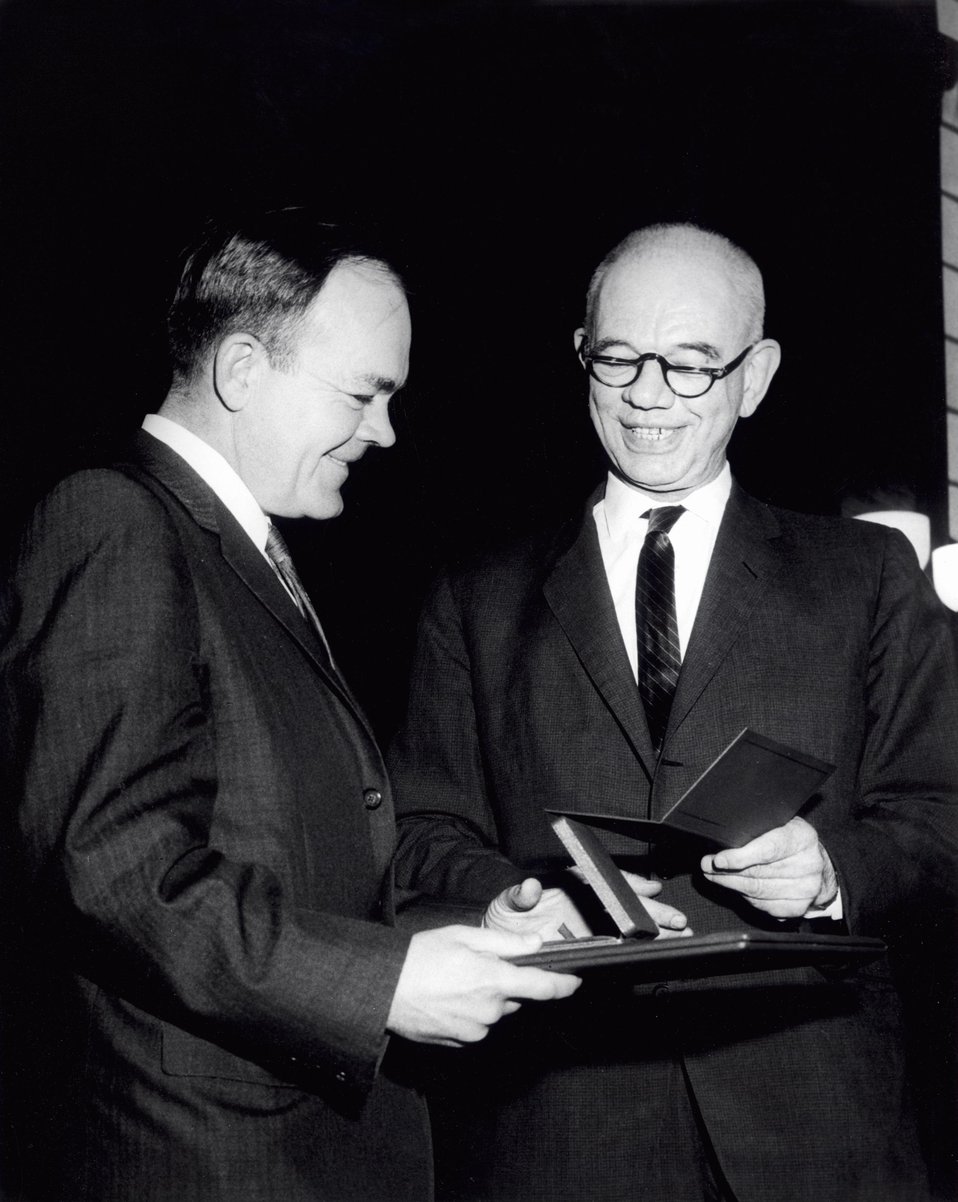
Dr. Haworth, Dr. Kouts. ERNEST O. LAWRENCE AWARD - 1963. National Academy of Sciences, April 25, 1963.